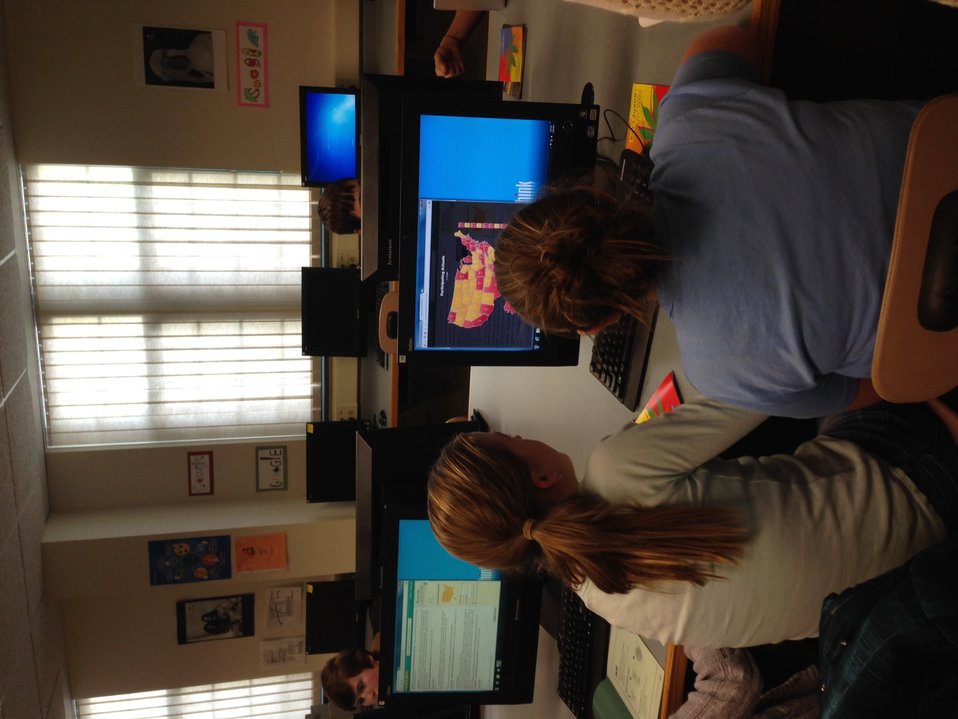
Chat Day at Strong Middle School in Durham, Connecticut